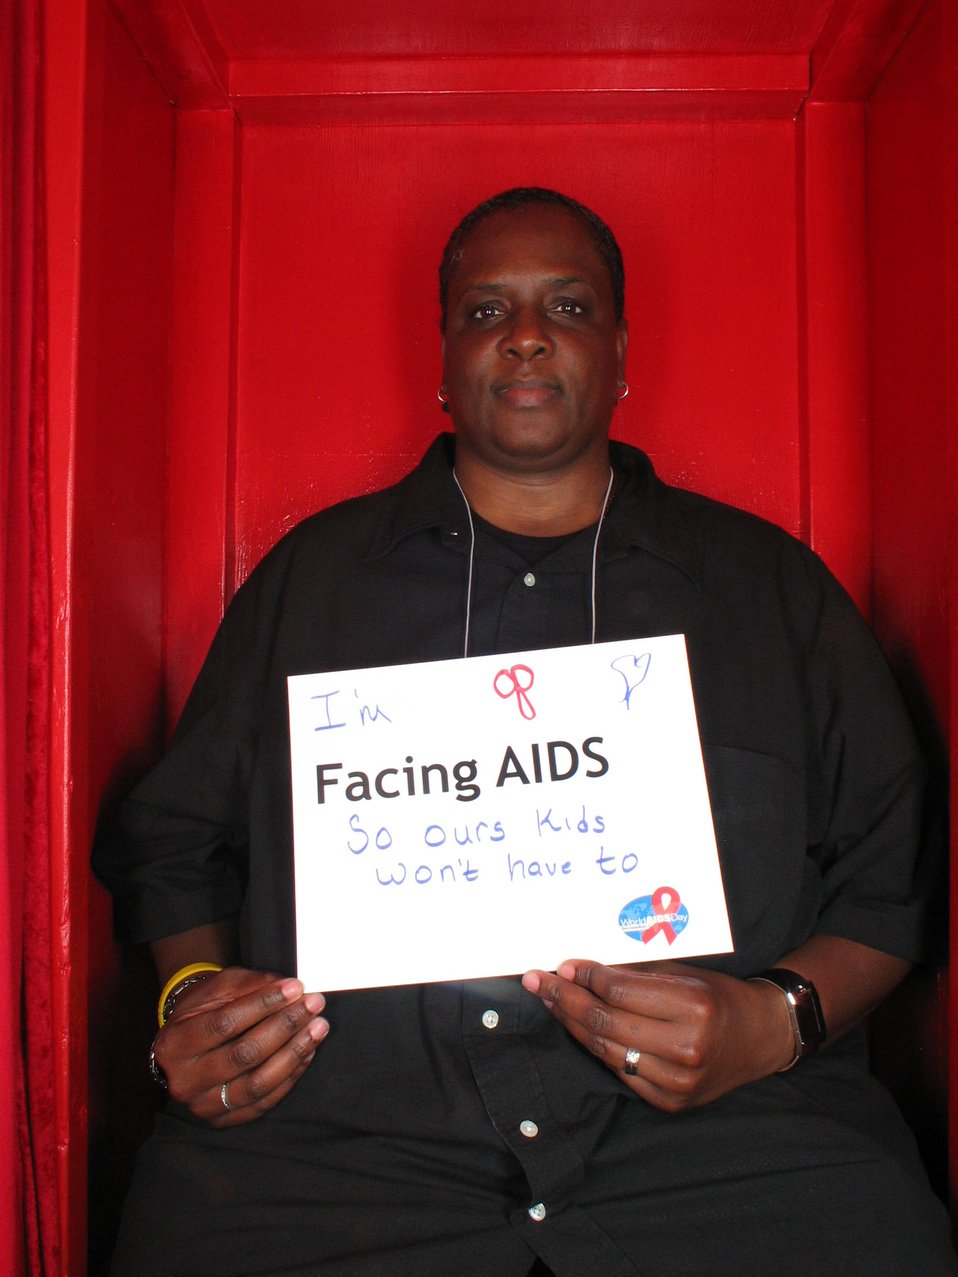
I'm Facing AIDS so our kids won't have to